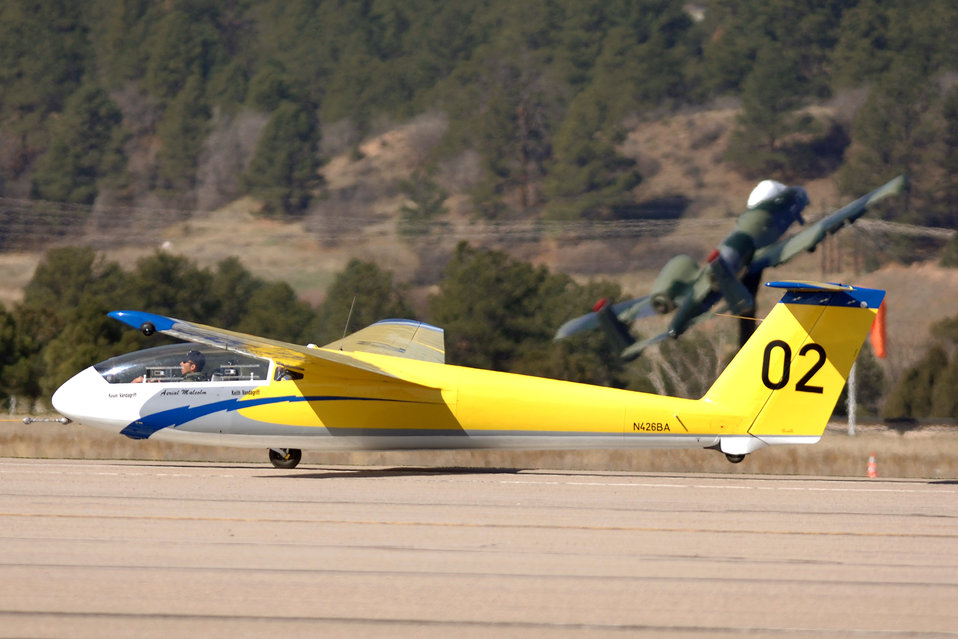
Gliders help future Air Force leaders soar

A TG-10B glider lifts into the air as it is towed down the runway by a Piper Super Cub tow plane at the U.S. Air Force Academy, Colo. The 94th Flying Training Squadron conducts more than 15,000 training and competition glider sorties annually, focused on developing leadership in more than 4,000 Air Force Academy and ROTC cadets.